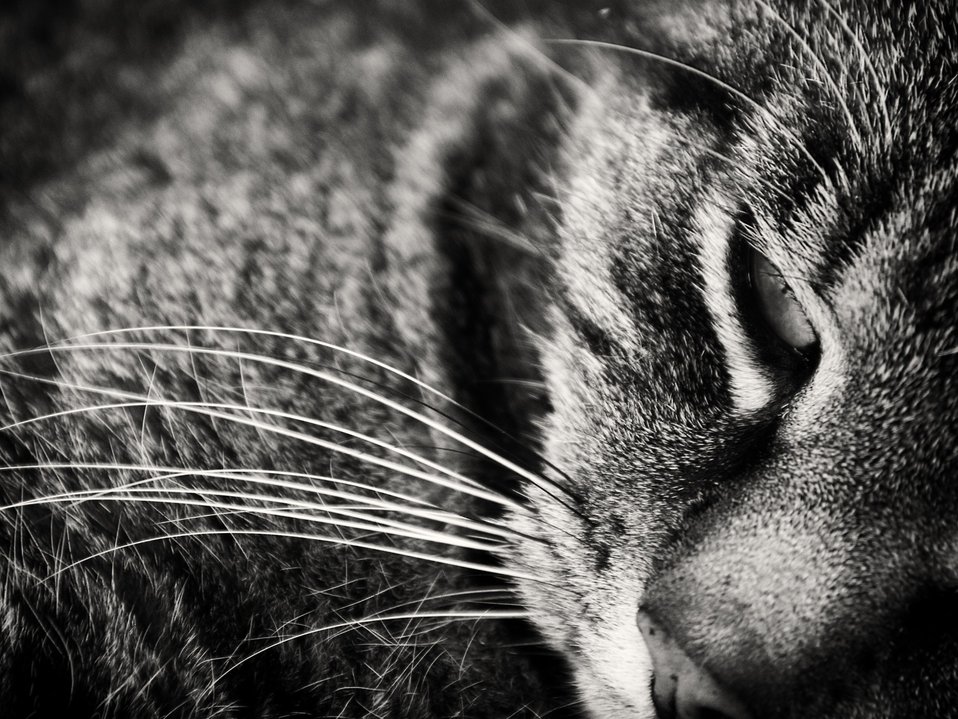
Cat black and white

Cat detail black and white.